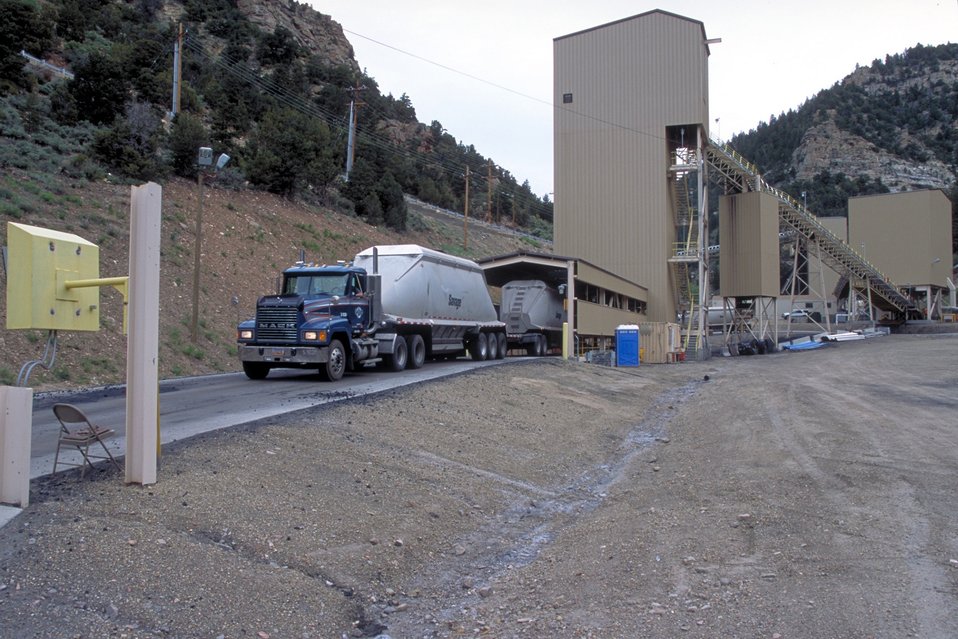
Coal production near Price, Utah.